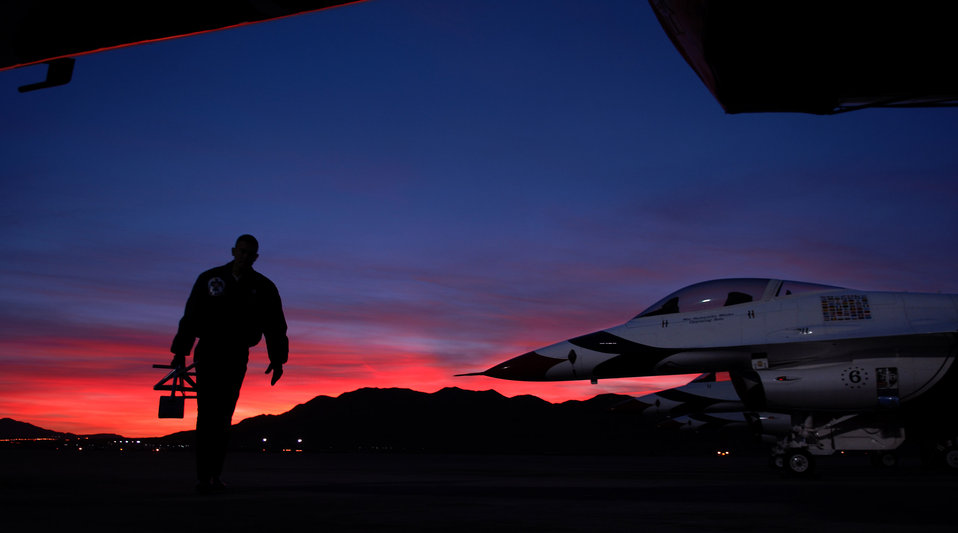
Thunderbirds

Staff Sgt. Steve Radnor spends his early monring preparing aircraft for the day's training missions Feb. 6 at Nellis Air Force Base, Nev. The U.S. Air Force Thunderbirds accomplish more than 150 training missions in preparation for an eight-month air show season. Sergeant Radnor is a weapons specialist with the U.S. Air Force Thunderbirds.